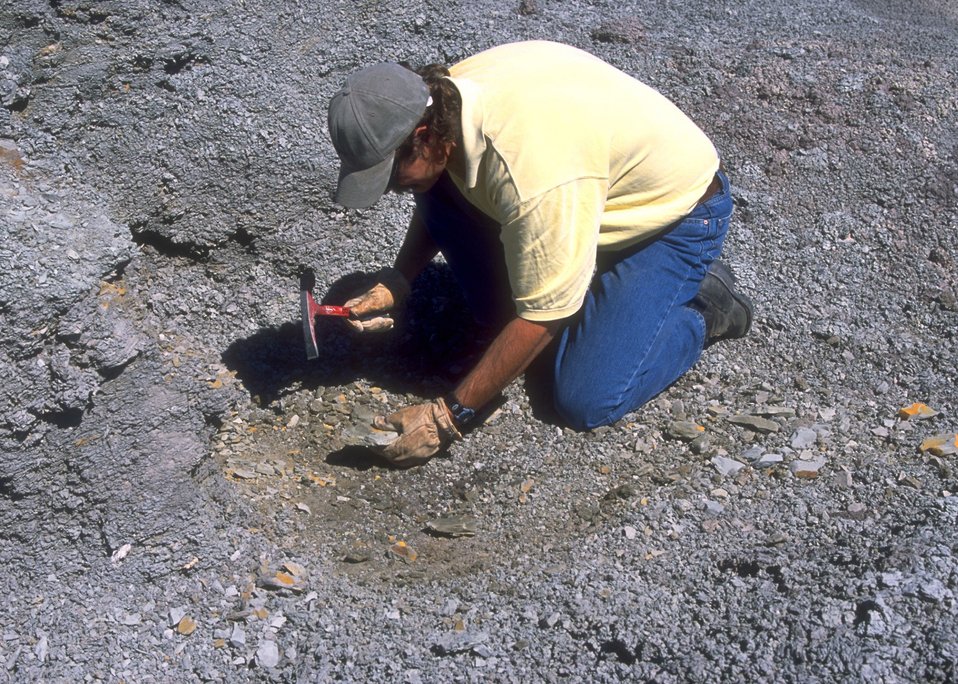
Dave Baker, WFO, examining fossils at the Cedar Ridge Paleo area, Lander Field Office.